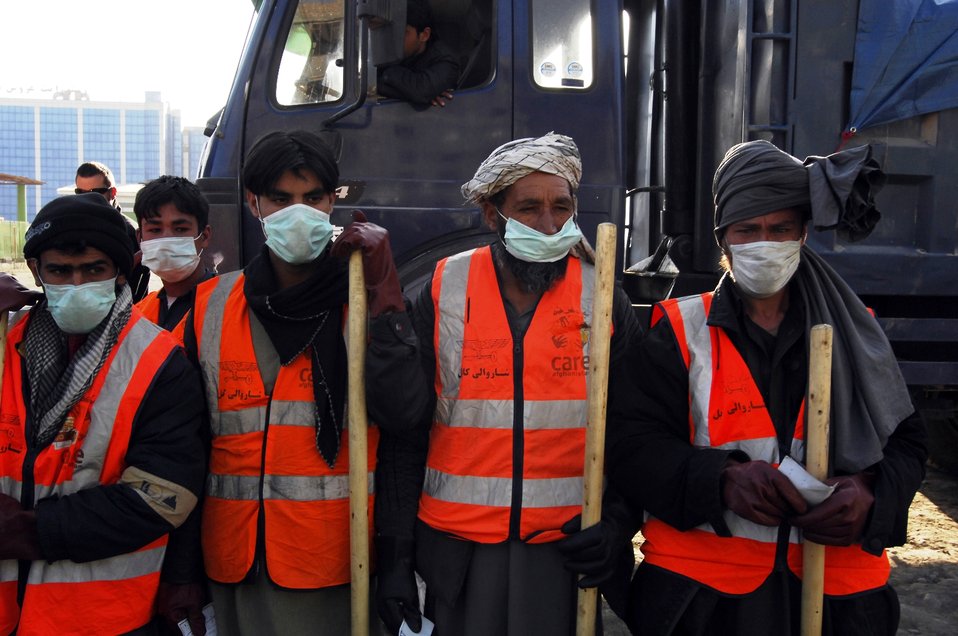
Care98